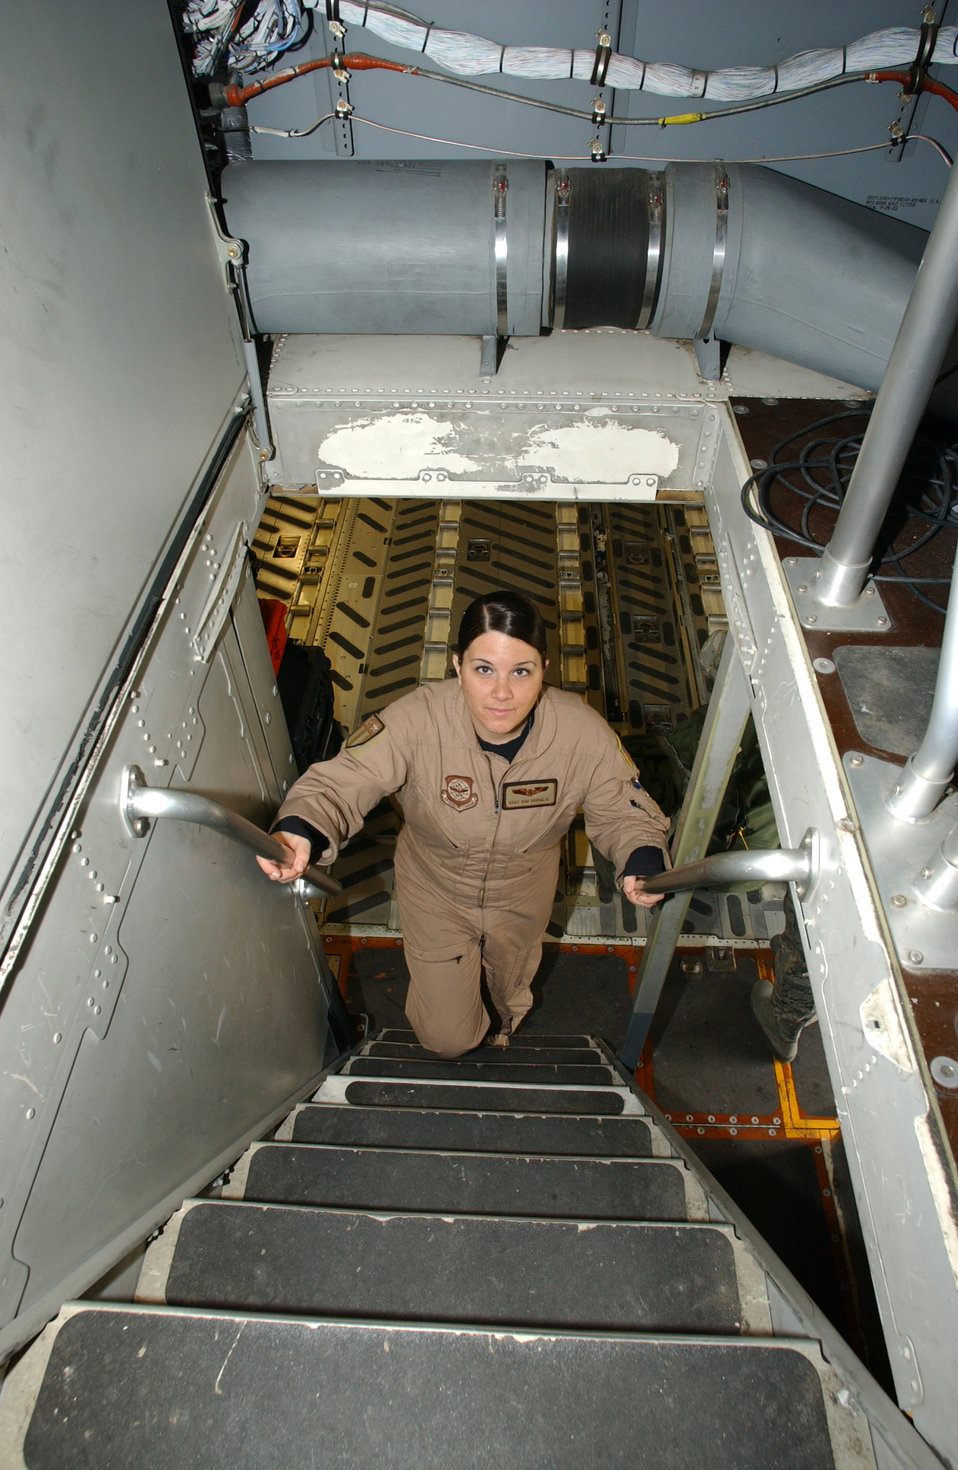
C-17 Loadmaster

On the road, the C-17 Globemaster III is Staff Sgt. Adrienne Gariglio's home, office and warehouse. But she's ready to convert the jet into a flying ambulance, too.